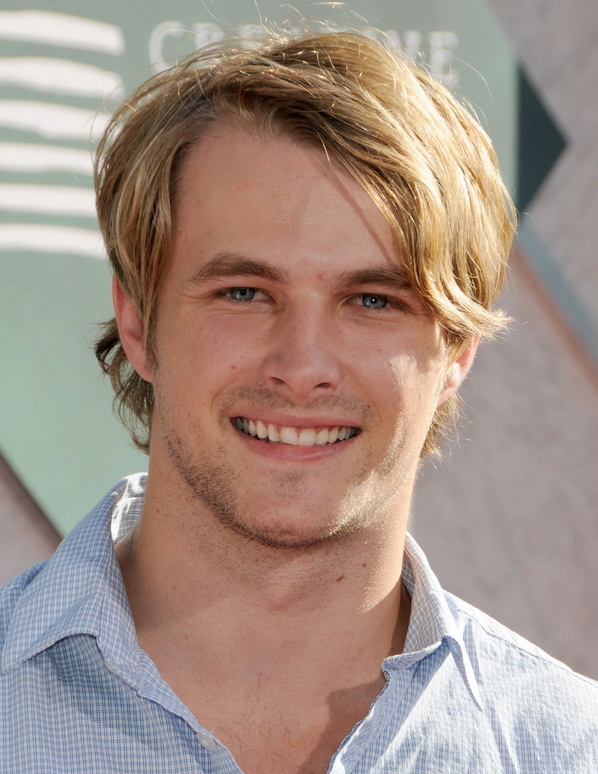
James Preston at the screening Of The Sorcerer's Apprentice at Walt Disney Studios